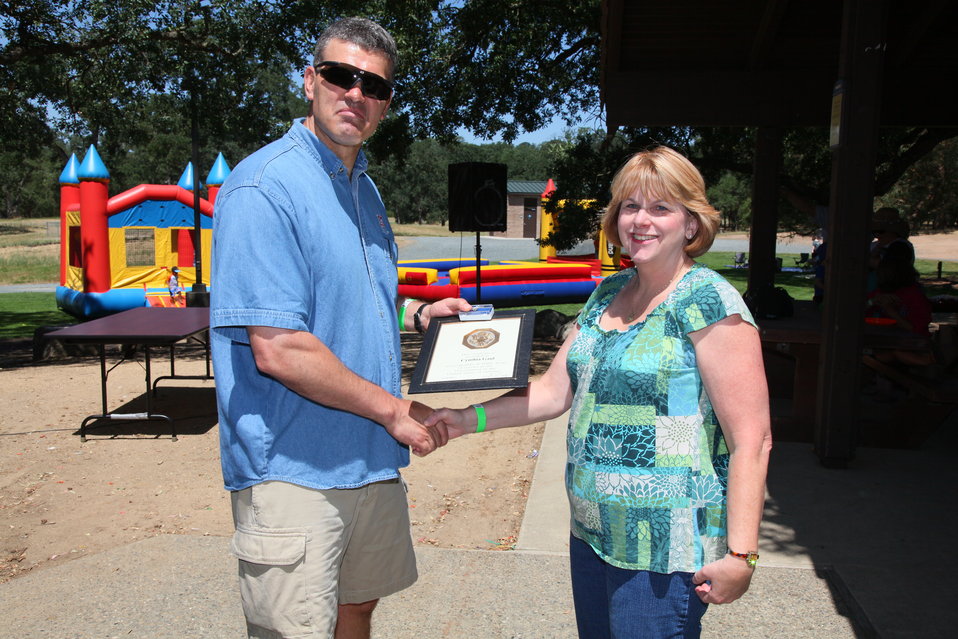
2011 Annual Picnic